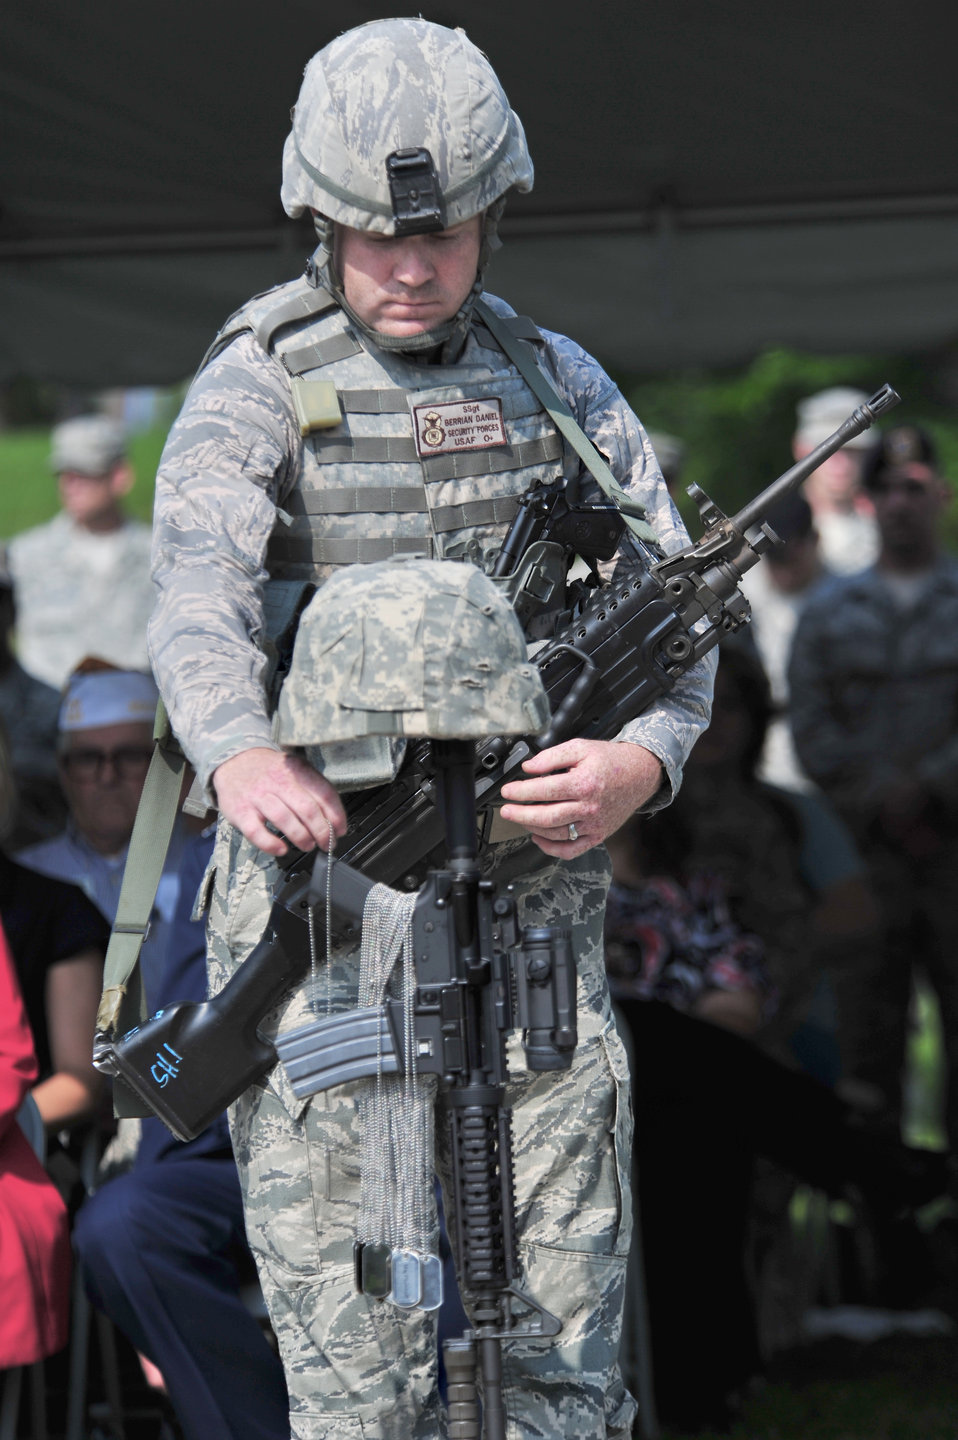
Fallen Airmen Memorial

Staff Sgt. Daniel Berrian places the dog tags of one of the fallen Airmen on the battlefield cross at the dedication ceremony for the Fallen Airmen Memorial June 2, 2010, at Memorial Lake, S.C. Sergeant Berrian is with the 20th Fighter Wing Security Forces.